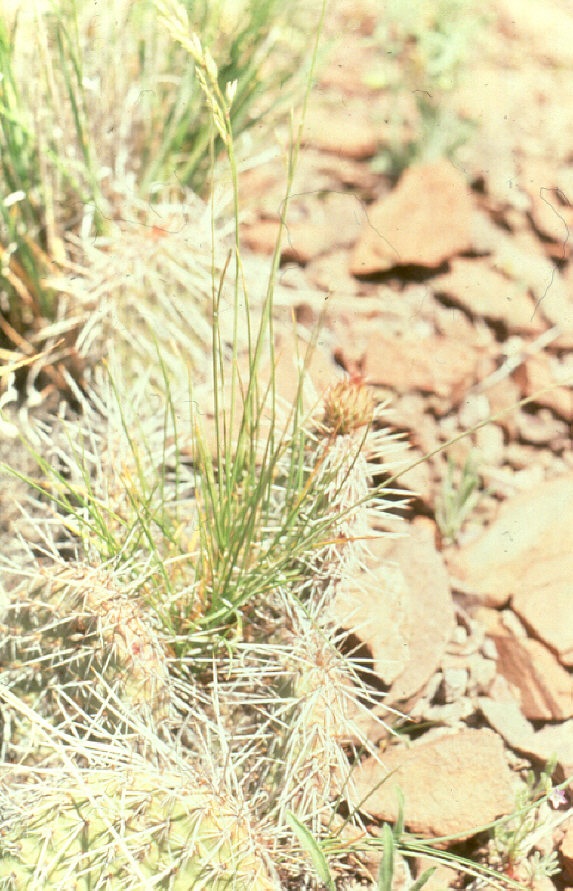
Prickly Pear Cactus Salmon FIeld Office UCSC Upper Columbia Salmon Clearwater District